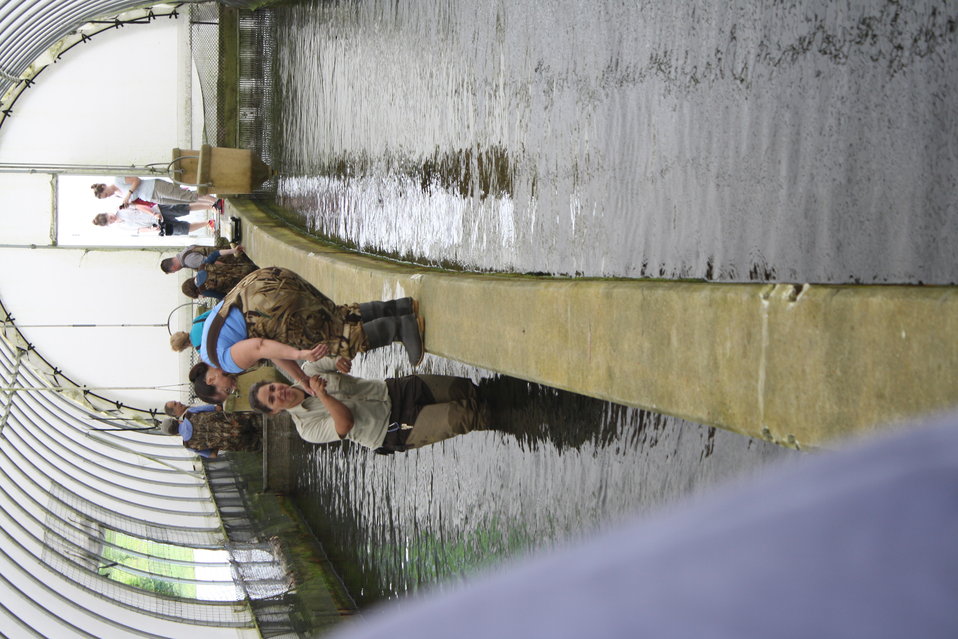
Nashua National Fish Hatchery welcomes regional office employees

Staff entering the raceways.